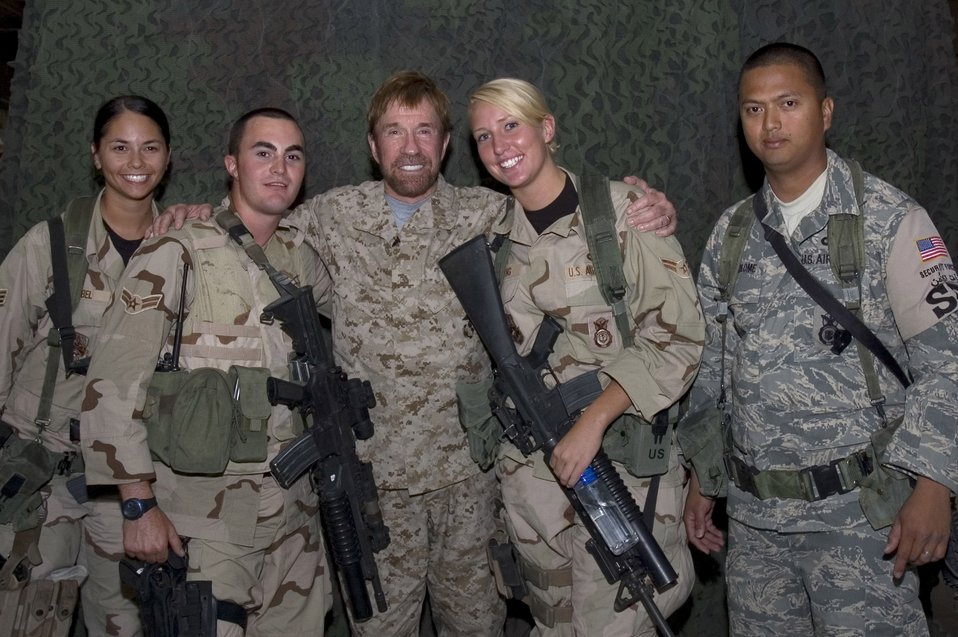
Chuck Norris visits deployed Airmen

Chuck Norris poses with security forces Airmen from the 386th Air Expeditionary Wing in Southwest Asia. The